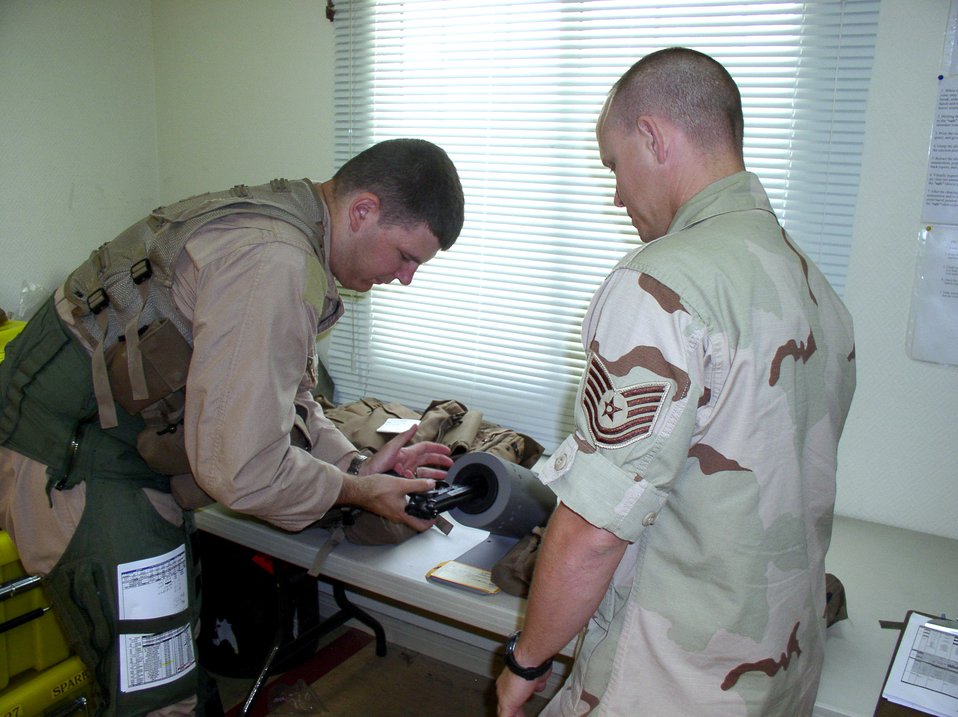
Aircrew support

Life support specialist Tech. Sgt. Theodore Angel watches as Capt. Joseph Howell, a weapons systems officer, loads his M-9 pistol before leaving for a combat mission on Saturday, July 1. Captain Howell and Sergeant Angel are deployed to the 335th Expeditionary Fighter Squadron in Southwest Asia, and are both from Seymour Johnson Air Force Base, N.C.